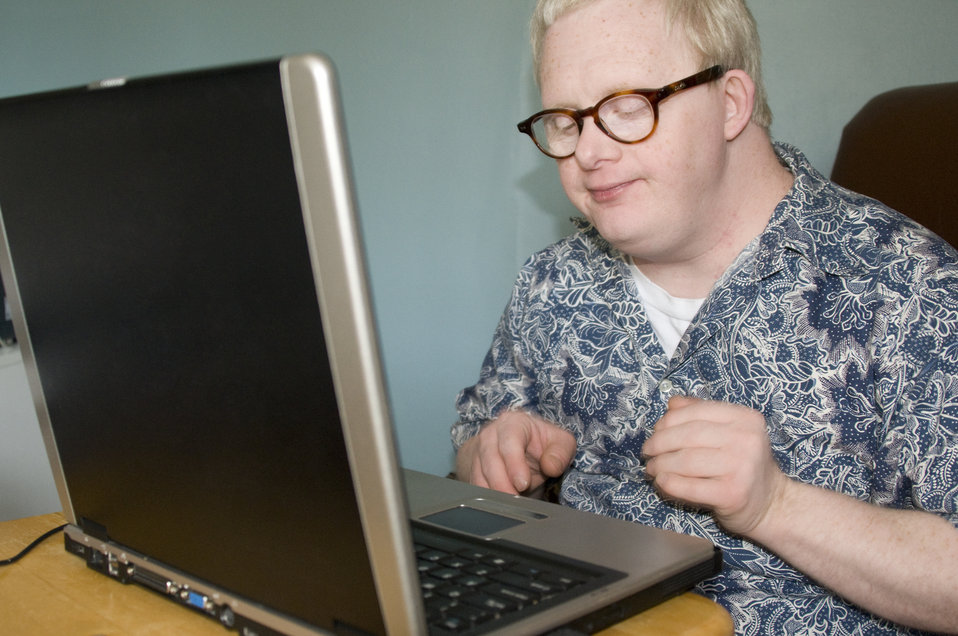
A man using a laptop

The man pictured here was shown using a laptop computer. Though intellectually-challenged, he is still able to navigate his way through the Internet, and effectively use this computer, and its keyboard controls.